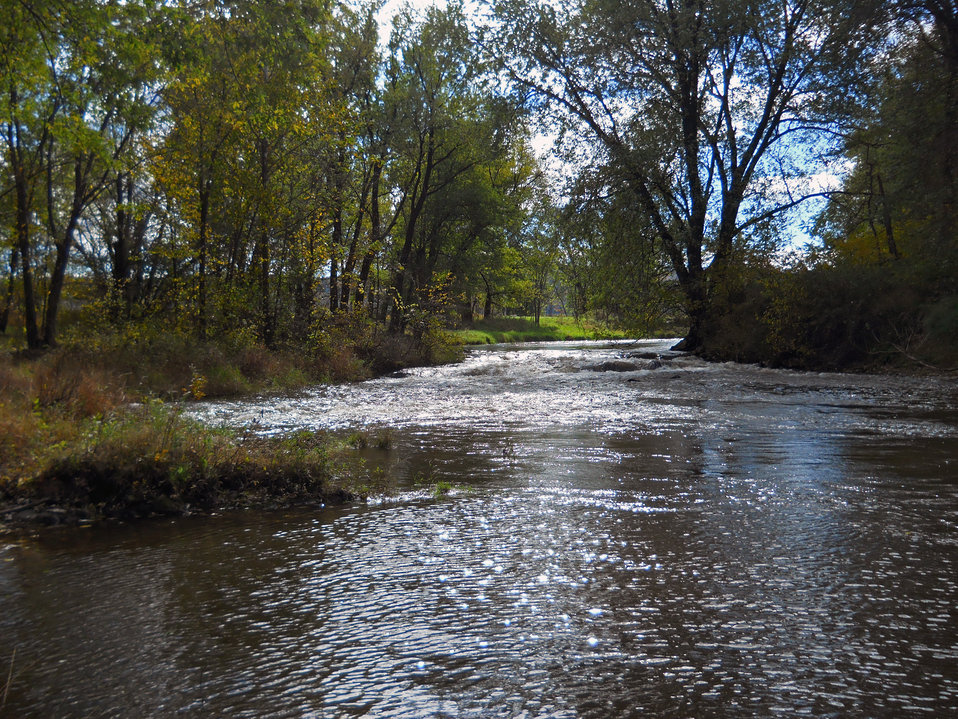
Wallkill River National Wildlife Refuge in New Jersey and New York.